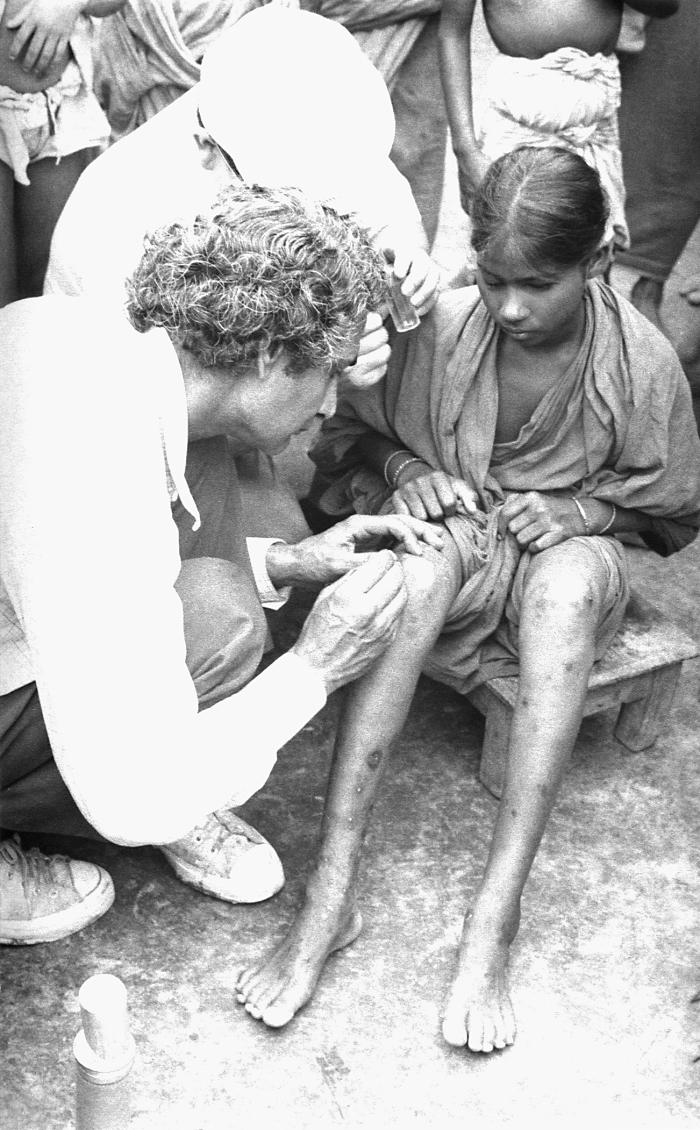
This 1975 image depicted World Health Organization (WHO) epidemiologist Dr. Hari Mehta, collecting the lesion scabs from the legs of a young girl who was suspected of having smallpox, which will be sent to a laboratory for a diagnostic confirmation.Today, laboratory criteria for confirmation* include a polymerase chain reaction (PCR) identification of variola DNA in a clinical specimen, OR the isolation of smallpox (variola) virus from a clinical specimen, i.e., WHO Smallpox Reference laboratory or laboratory with appropriate reference capabilities, with variola PCR confirmation.*Laboratory diagnostic testing for variola virus should be conducted in a CDC Laboratory Response Network (LRN) laboratory utilizing LRN-approved PCR tests and protocols for variola virus. Initial confirmation of a smallpox outbreak requires additional testing at CDC.